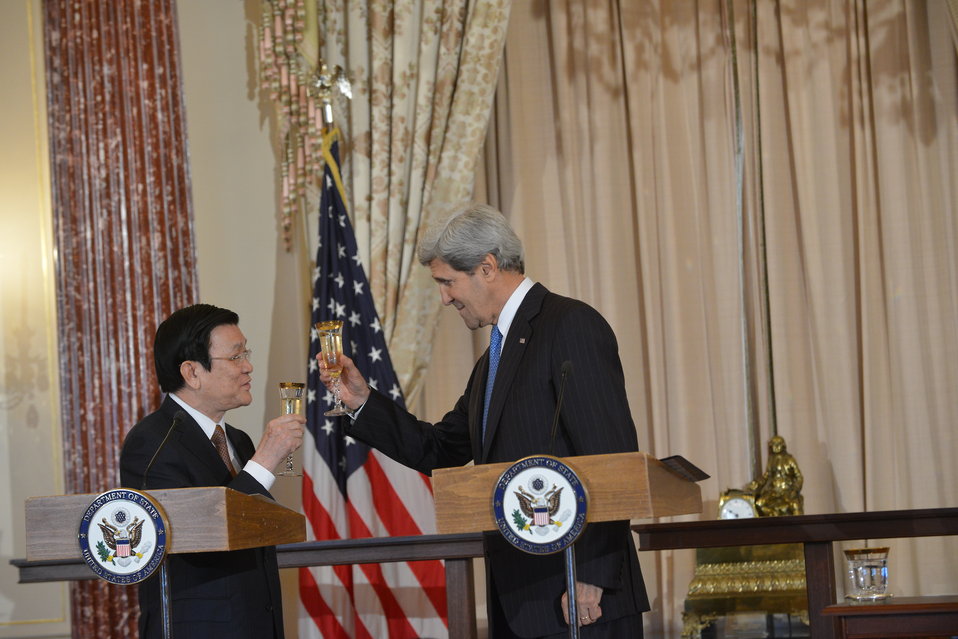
Secretary Kerry and Vietnamese President Truong Tan Sang Toast the U.S.-Vietnam Relationship

U.S. Secretary of State John Kerry and Vietnamese President Truong Tan Sang toast the U.S.-Vietnam relationship during their working lunch at the U.S. Department of State in Washington, D.C., on July 24, 2013.